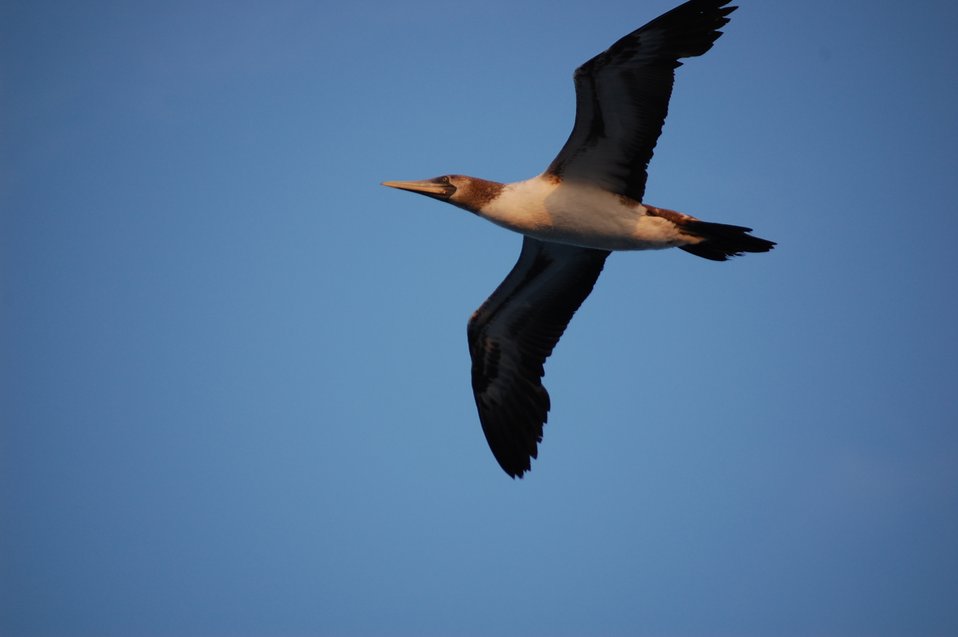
Red-footed booby in flight.